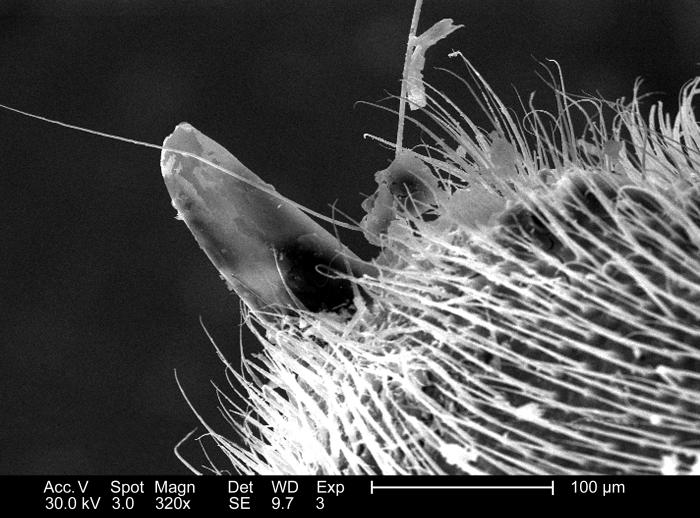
This low magnified scanning electron micrograph (SEM) depicted a ventral view of the distal tip a Western honeybee's, Apis mellifera, stinger apparatus. What is revealed is the concave, tip of the stinger sheath, within which runs the barbed, paired lancets and the accompanying stylet. It is between these structures that the poison flows through a tube-like tunnel, once these stinger components penetrate the skin; Magnified 320x.